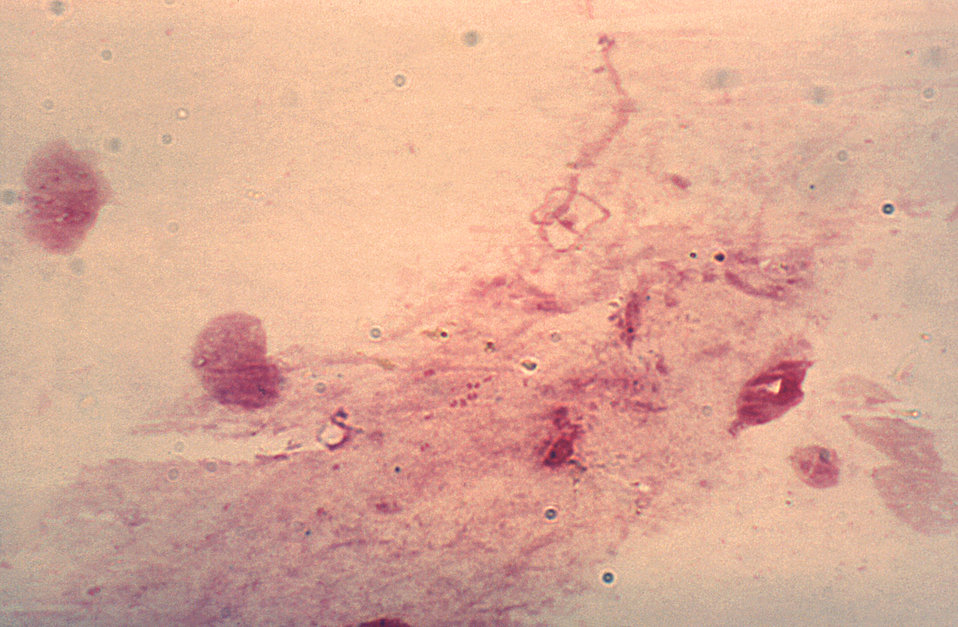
This cervical smear photomicrograph reveals extracellular diplococci determined to be Neisseria gonorrhoeae bacteria.